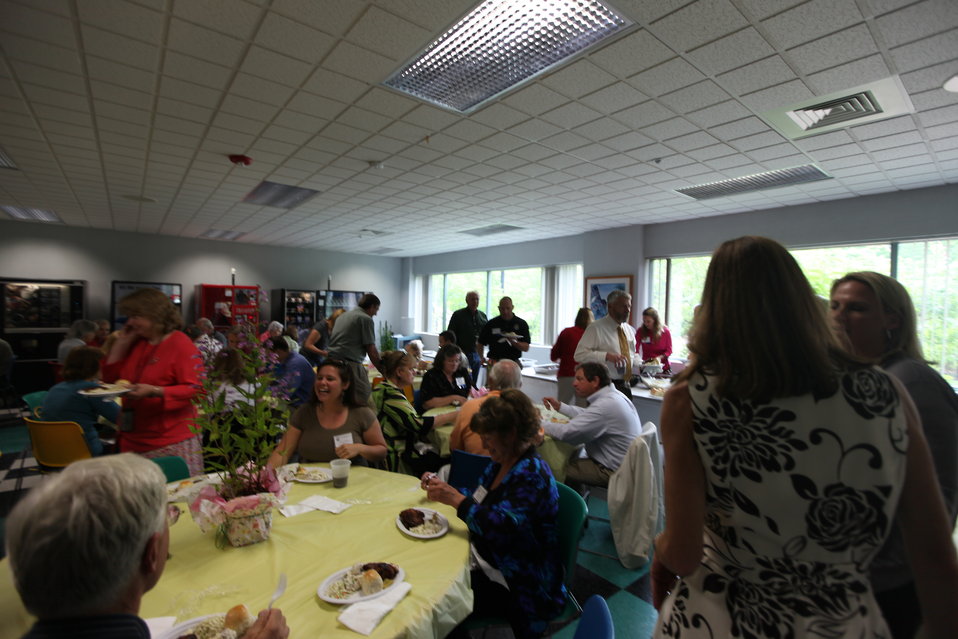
Northeast Region Employee Appreciation Awards

Luncheon